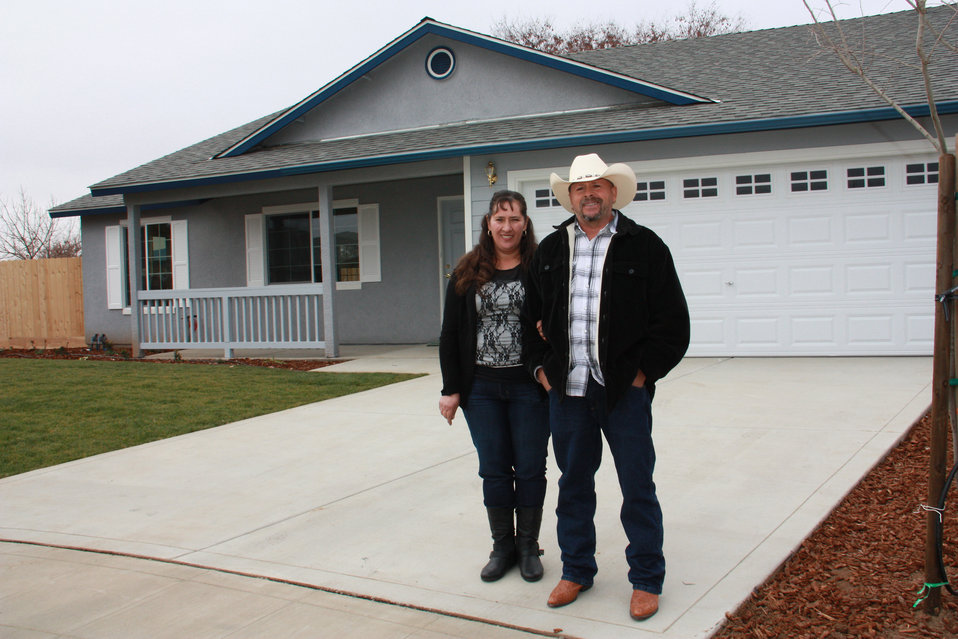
Gordillo

Maria and Ignacio Gordillo stand before their new home in Reedley, CA. Along with 10 other families, the Gordillos helped build their house through the U.S. Department of Agriculture's (USDA) Mutual Self-Help Housing Loan program in partnership with Self-Help Enterprises.